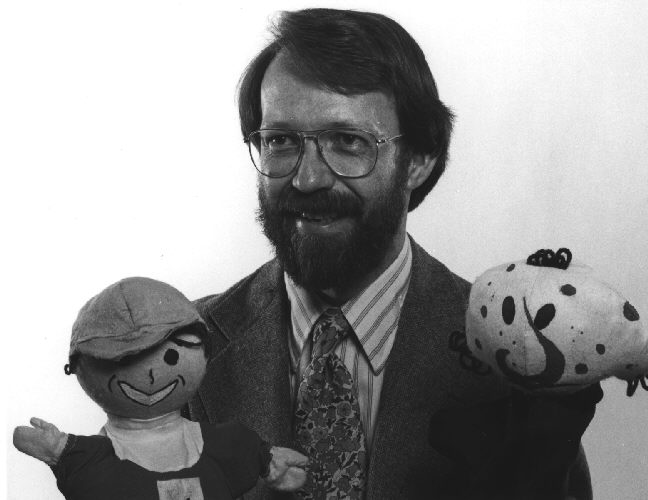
Immunization for children